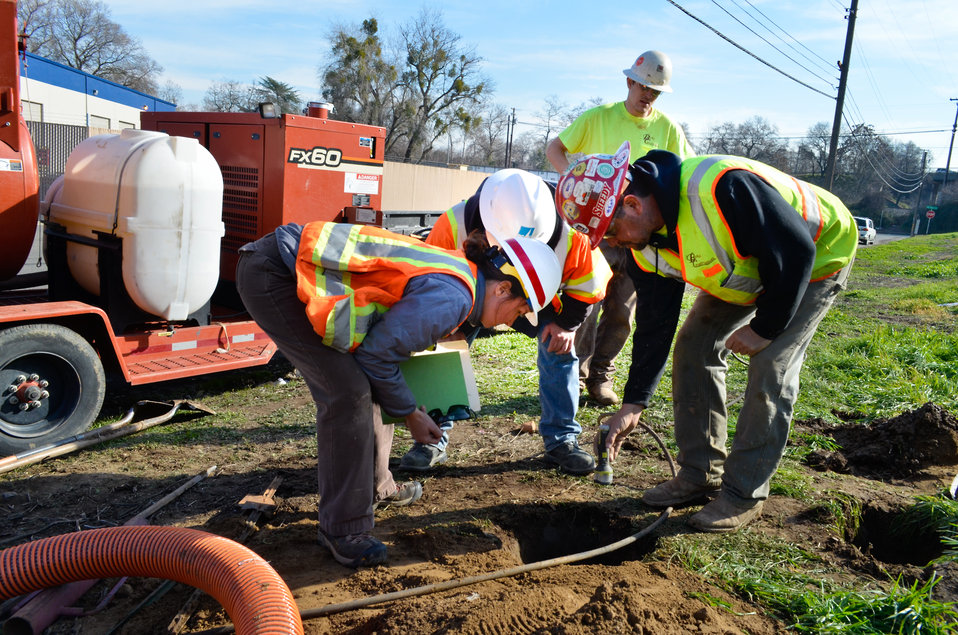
Utility ‘potholing’ along the American River

Christy Leonard (left), geologist for U.S. Army Corps of Engineers Sacramento District, looks for a buried gas line in a freshly dug 'pothole' near an American River levee Jan. 15, 2013 in north Sacramento, Calif. Potholing is a procedure used to verify and document the location of buried utilities like water or gas lines to determine if they are in the way of upcoming levee construction. Levee work is targeted to begin on this stretch of the American River in June 2014.